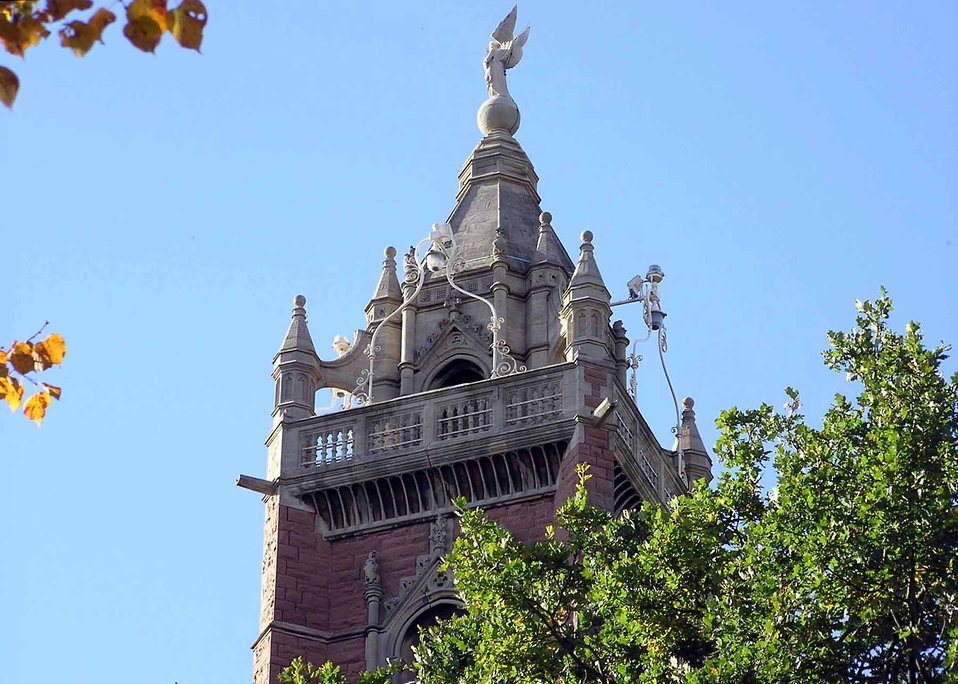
The Cabot Tower, Bristol, England.
The 105 foot high (32 metre) Cabot Tower on Brandon Hill is in the city centre of Bristol, England. The tower was opened in 1898 to commemorate the 400th anniversary of explorer John Cabot’s voyage to America in 1497. The tower was built from red sandstone and cream Bath stone. The roman numerals CCCC(400) are engraved on the four sides. The winged figure on top represents Commerce. The tower is free admission. The view includes the leisure and housing complex being built at Canons Marsh (where At-Bristol is situated), the SS Great Britain ship, the Council House and Cathedral, the impressive University Tower and just a glimpse of the Clifton Suspension Bridge.